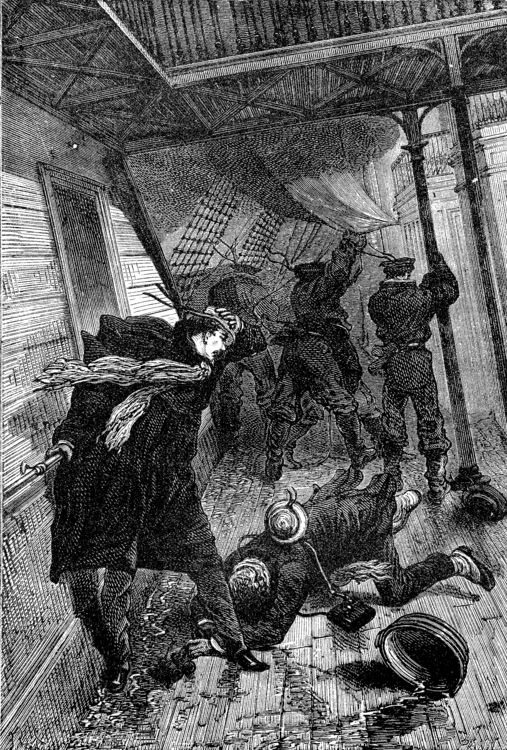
An illustration from Jules Verne's novel 'A Floating City' (1869) drawn by Jules Férat. Polski: Ilustracja powieści Juliusza Verne'a 'Pływające miasto' (1869) autorstwa Julesa Férata. Français : Jules Verne: 'Une Ville flottante' (1869), dessins par Jules Férat. Orginal text: Français : Quand un corps vint rouler à mes pieds.